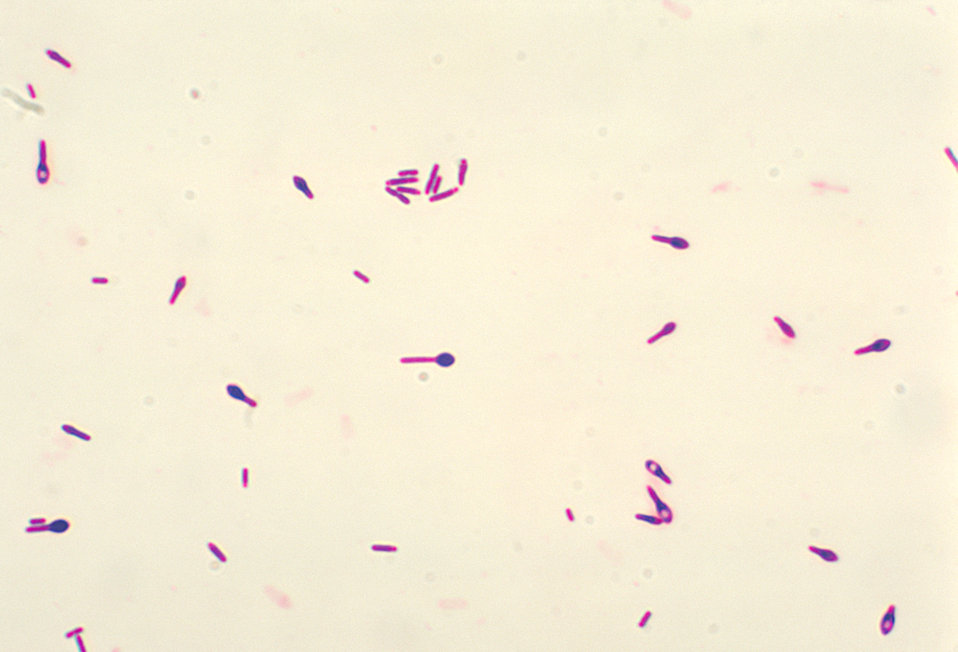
A photomicrograph of Clostridium botulinum type A viewed using a Gram stain technique.